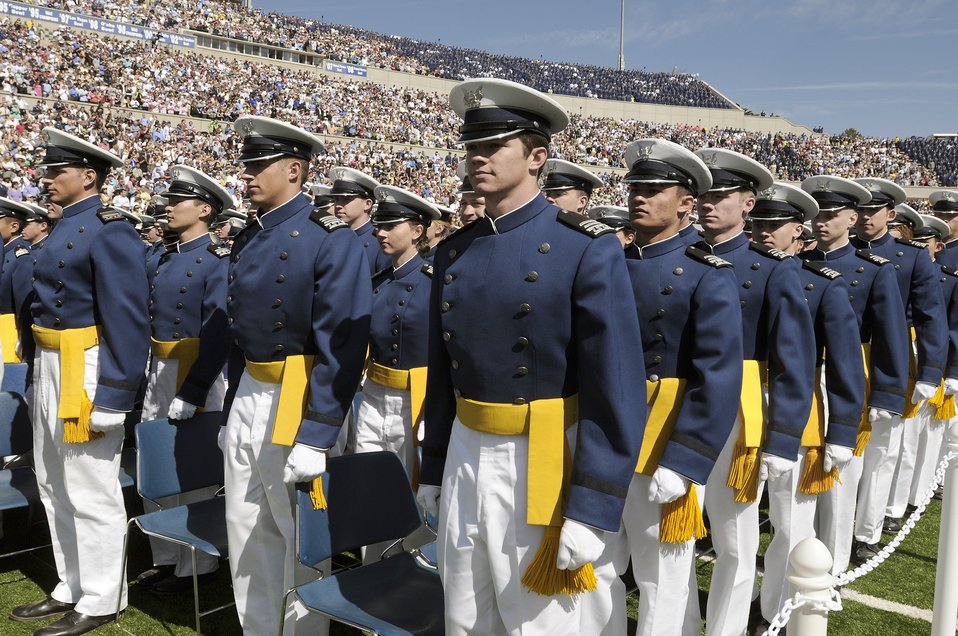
Joint Chiefs chairman delivers Academy commencement

Class of 2010 graduates march into Falcon Stadium to start graduation ceremonies May 26, 2010, at the U.S. Air Force Academy, Colo.